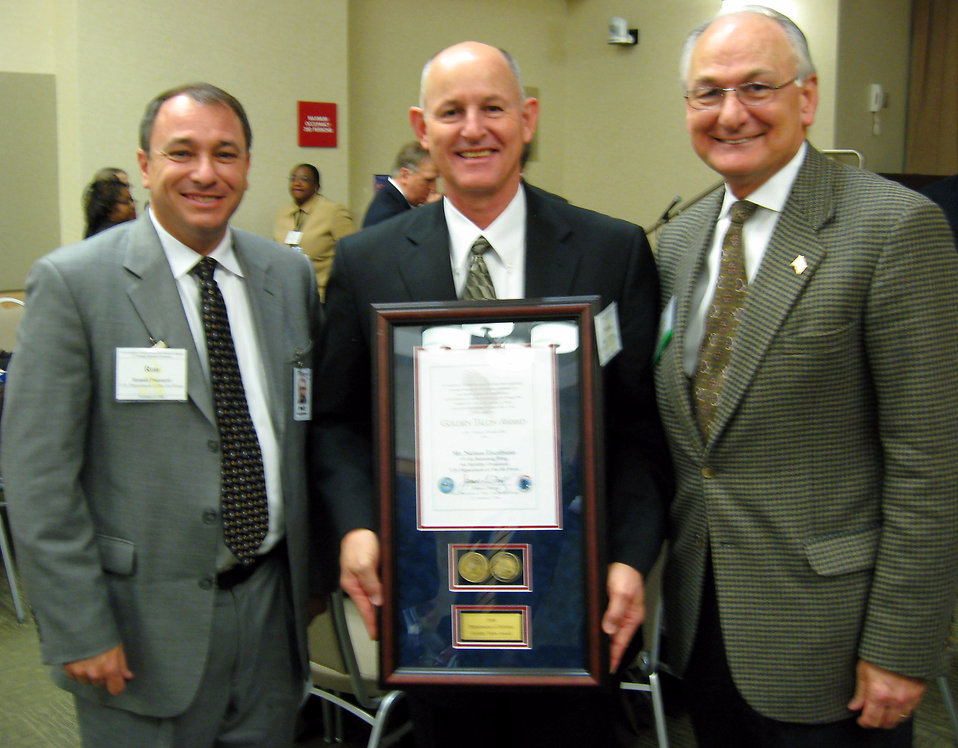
Small business specialist recognized with DOD award

Nelson Escribano ( center), recipient of the Golden Talon Award at the 2nd Annual Service-Disabled Veteran-Owned Small Business Program Awards Ceremony, is flanked by Ronald A. Poussard (left), the director of the Secretary of the Air Force Small Business Programs, and James I. Finley, deputy under secretary of defense for acquisition and technology. Mr. Escribano is the small business specialist at the 6th Air Mobility Wing, MacDill Air Force Base, Fla. The award ceremony was held at the Pentagon Conference Center Nov. 17.